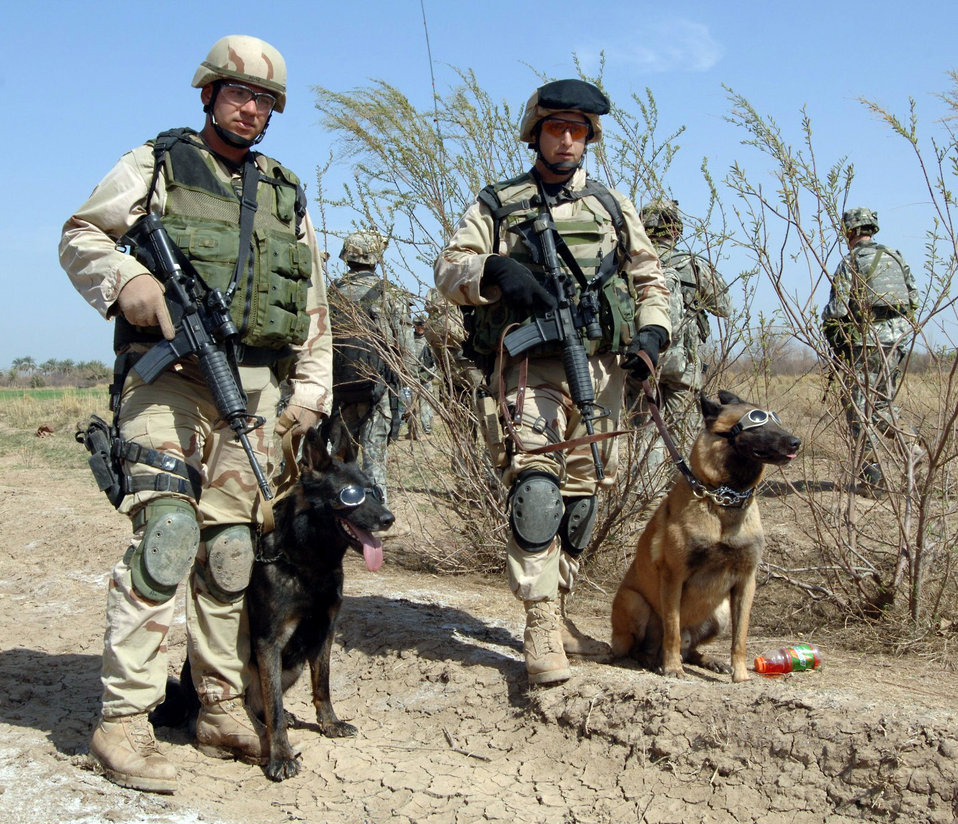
Priority 1: fighting and winning the war on terrorism

Air Force Chief of Staff General T. Michael Moseley said fighting and winning the long war against terrorism and militant extremism is one of the Air Force's three top priorities.